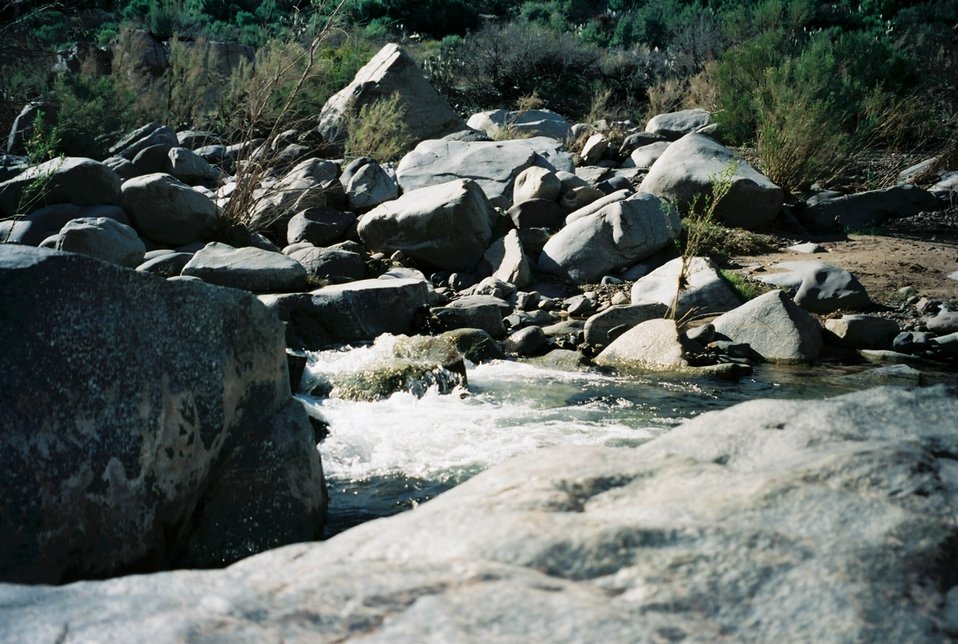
The Agua Fria River runs through the canyon that shares its name.